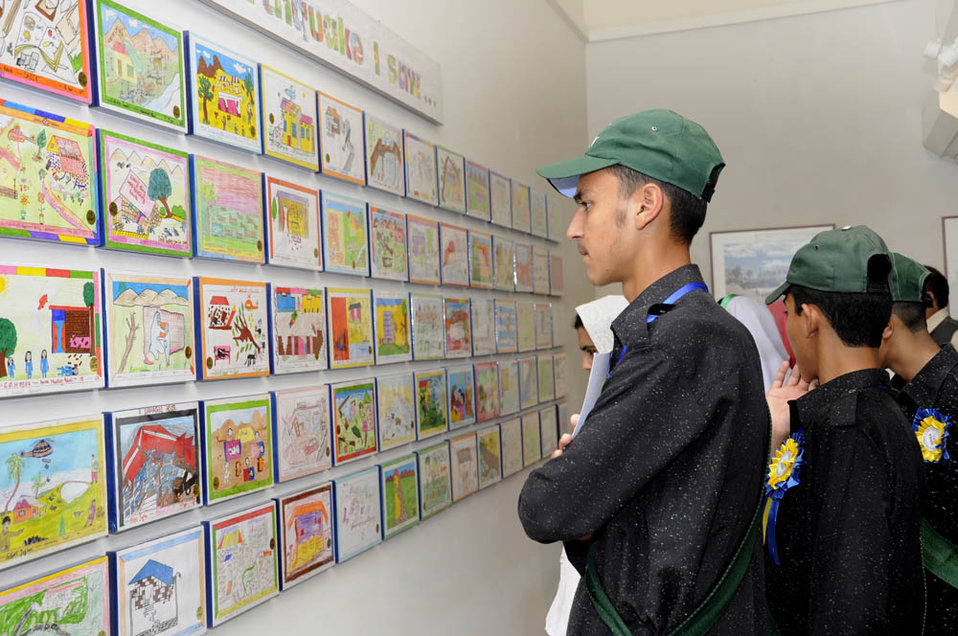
Photography and Drawing Exhibition on Pakistan 2005 Earthquake “Rebuilding Together: With Dignity and Hope”

Students from 2005 earthquake affected areas looking at their drawings at a photo exhibition “Rebuilding Together: With Dignity and Hope” at Pakistan National Council of Arts (PNCA) sponsored by USAID.